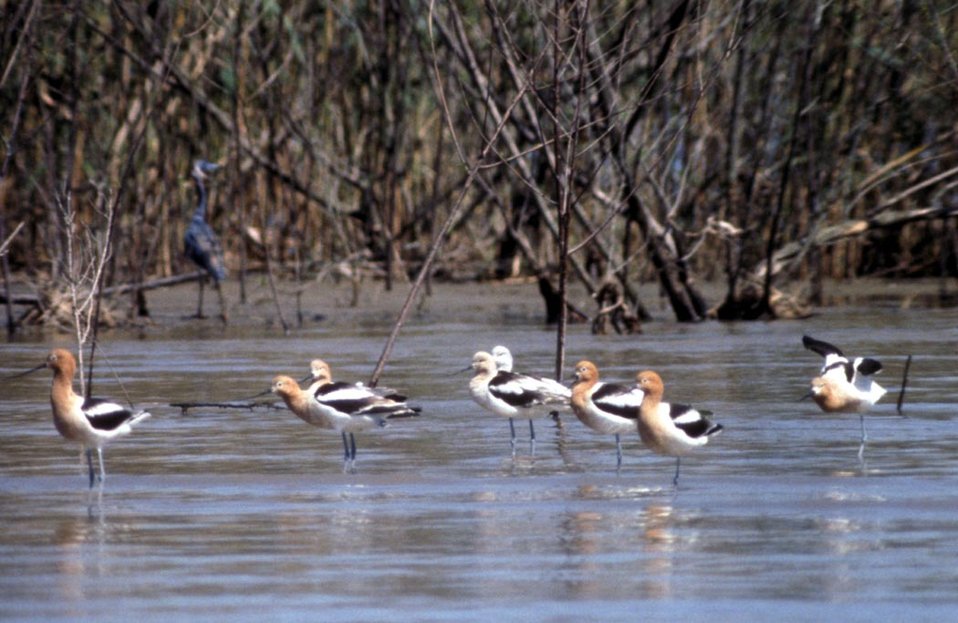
Avocets.